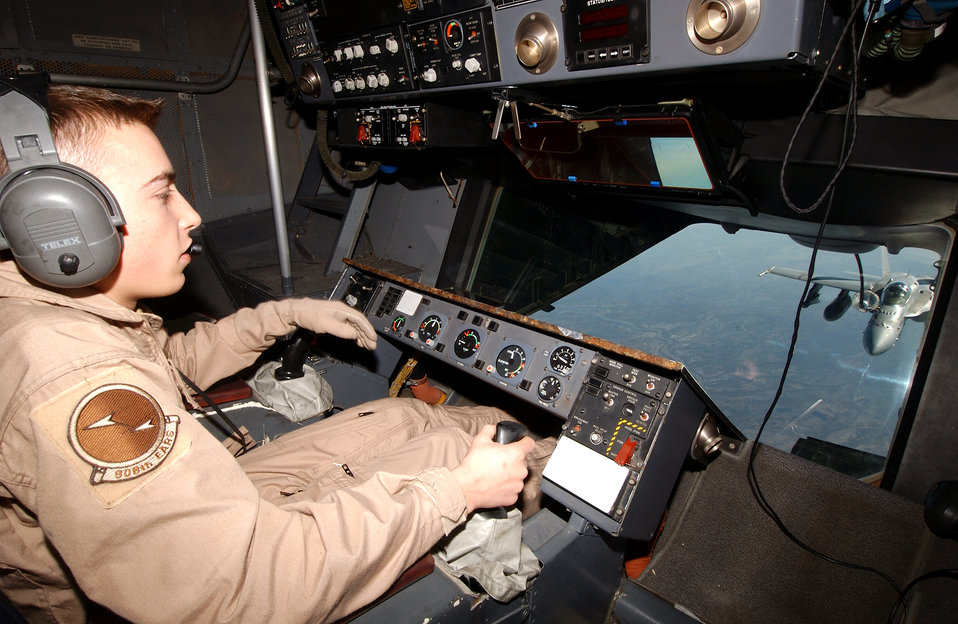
Boom operators provide fuel for warfighters

OVER IRAQ -- Airman 1st Class Phillip Culotta refuels an F/A-18 Hornet during a mission supporting Operation Iraqi Freedom. Airman Culotta is a boom operator with the 908th Expeditionary Air Refueling Squadron.